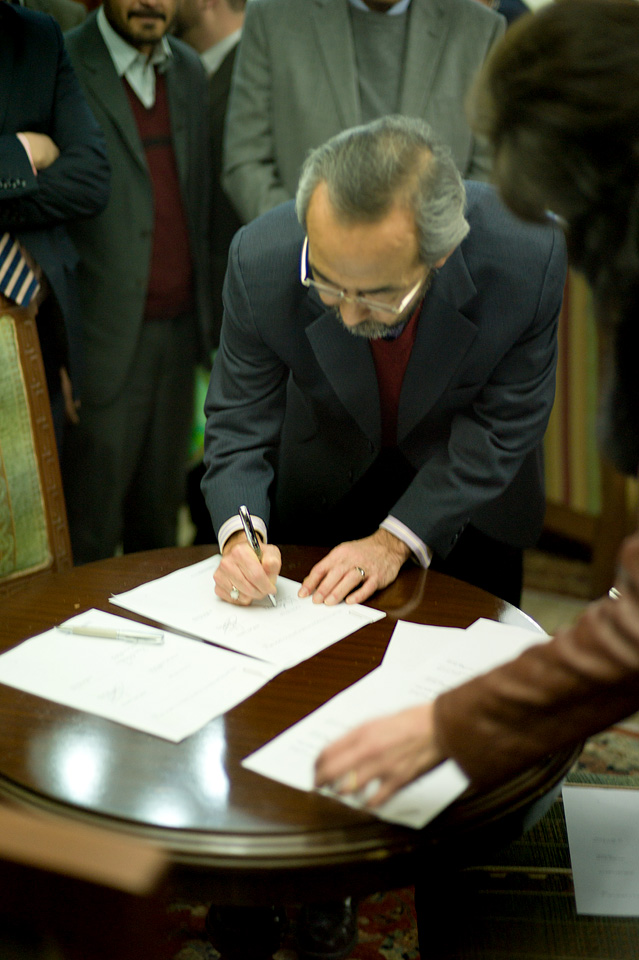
Ken Signing